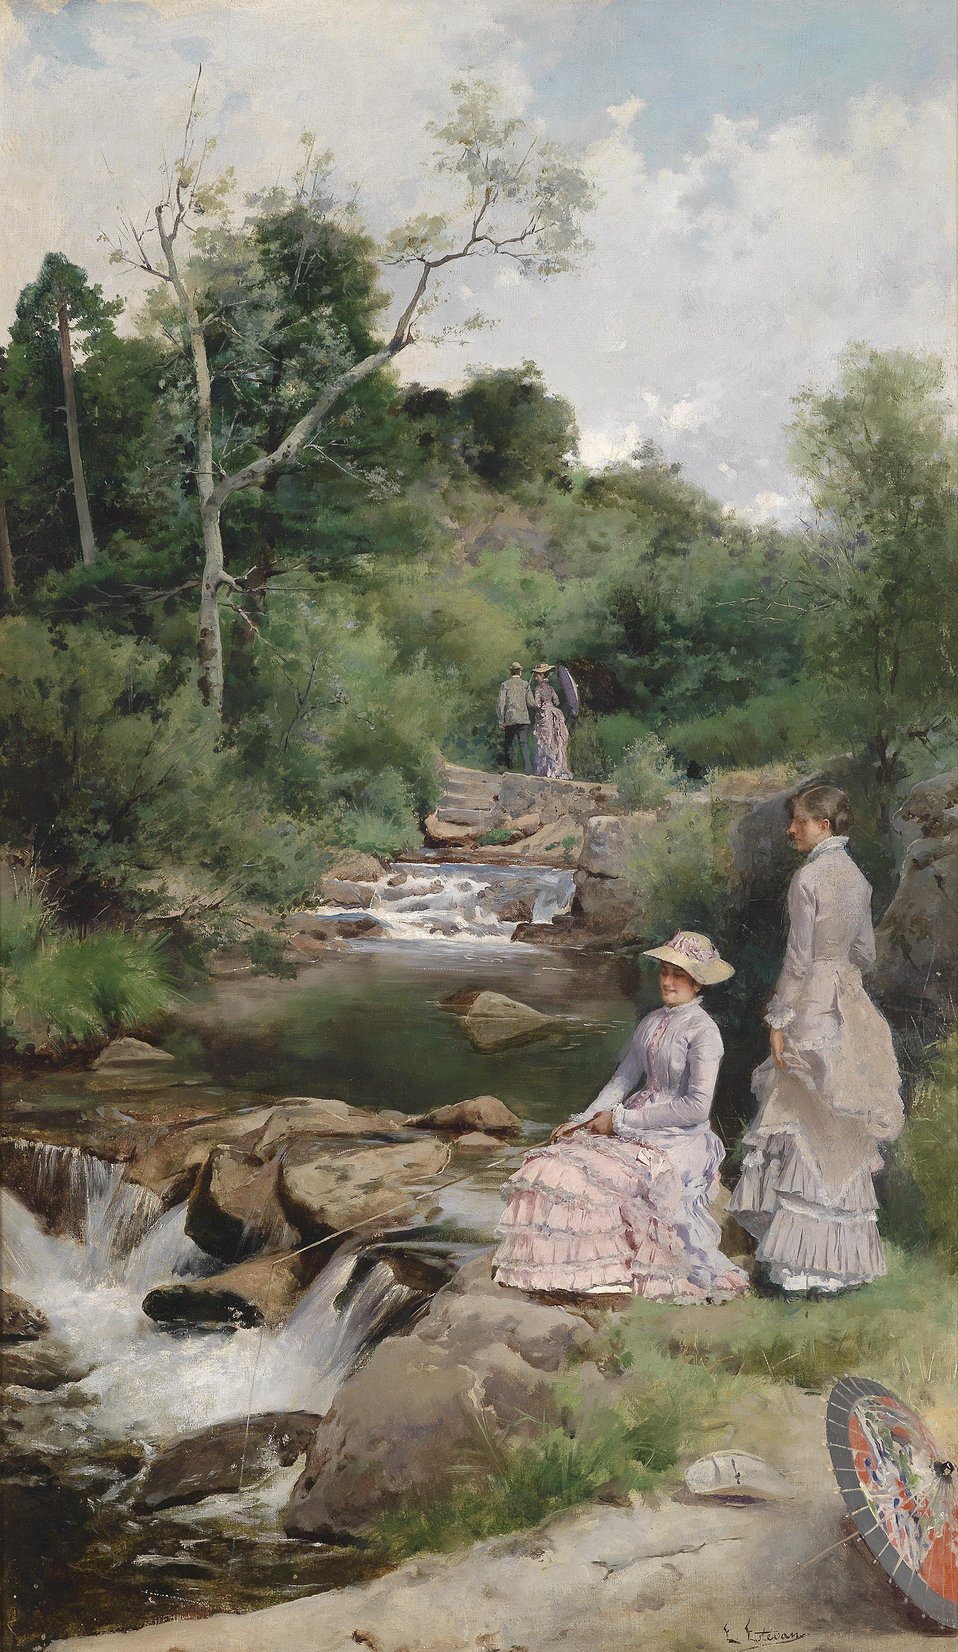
Deutsch: Zwei Anglerinnen mit Parasol am Bach, signiert, datiert E. Estevan 1880, Öl auf Leinwand, 74 x 44,5 cm